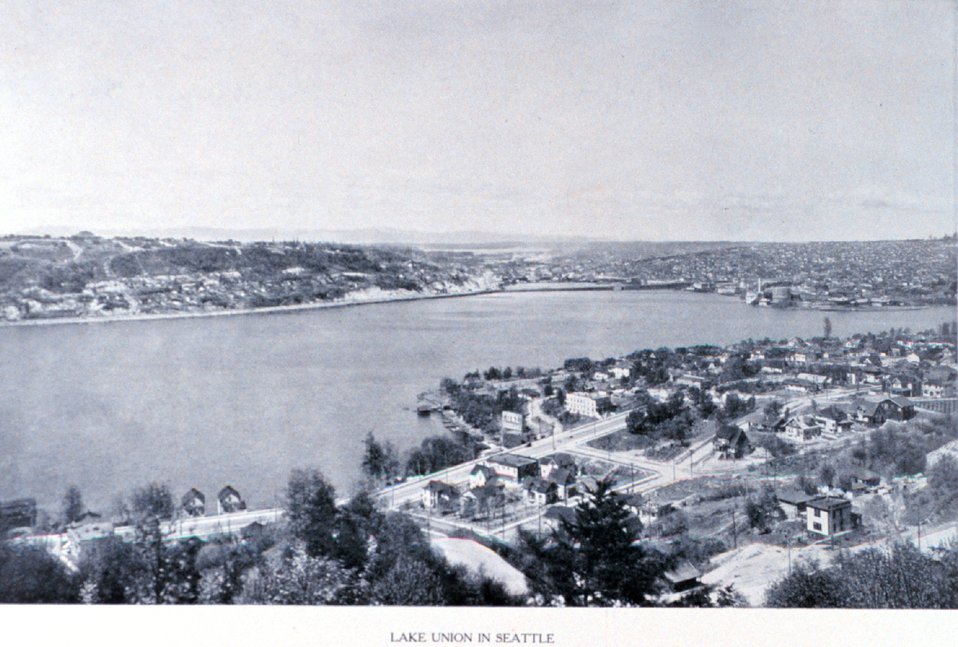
'Lake Union in Seattle'. The present-day NOAA Ship base is located in the near left corner of the lake. In: 'Puget Sound and Western Washington Cities-Towns Scenery', by Robert A. Reid, Robert A. Reid Publisher, Seattle, 1912. P. 78.